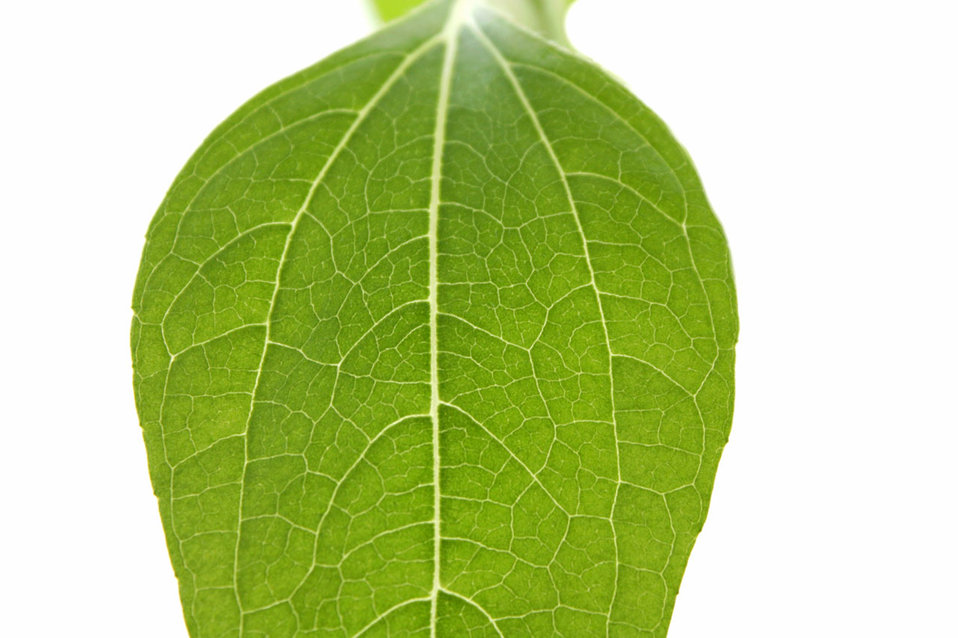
Leaf - white background.